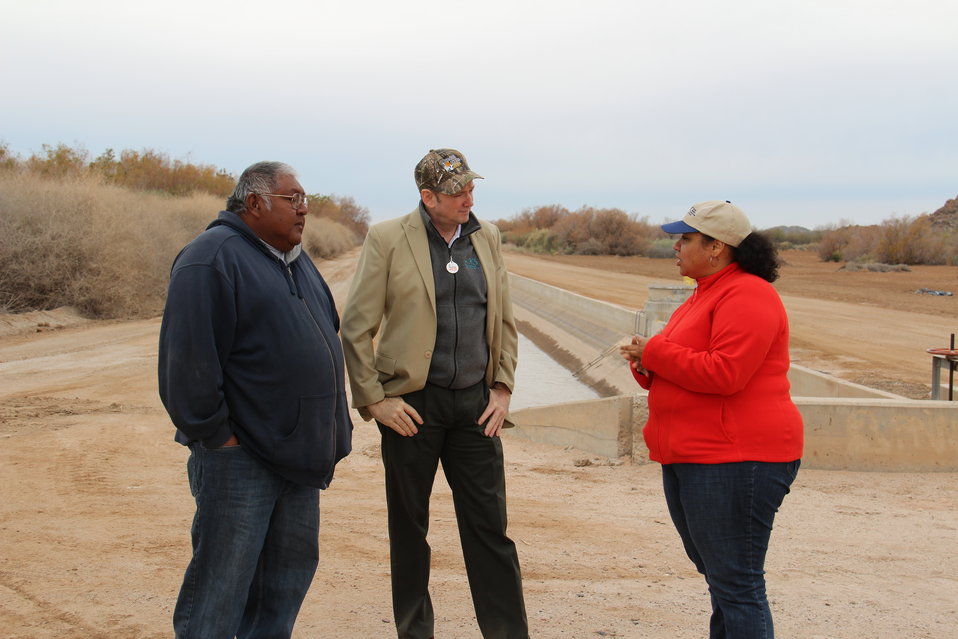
StrikeForce3

(L to R) U.S. Department of Agriculture (USDA) Natural Resource Conservation Service (NRCS) Arizona State Conservationist Keisha Tatem, USDA NRCS Assistant Chief Kirk Hanlin, and Gila River Tribal Community member Eric Juan discuss the efficiency gains of the concrete-lined irrigation ditch in the community. Before this ditch was lined, much of the water was lost.